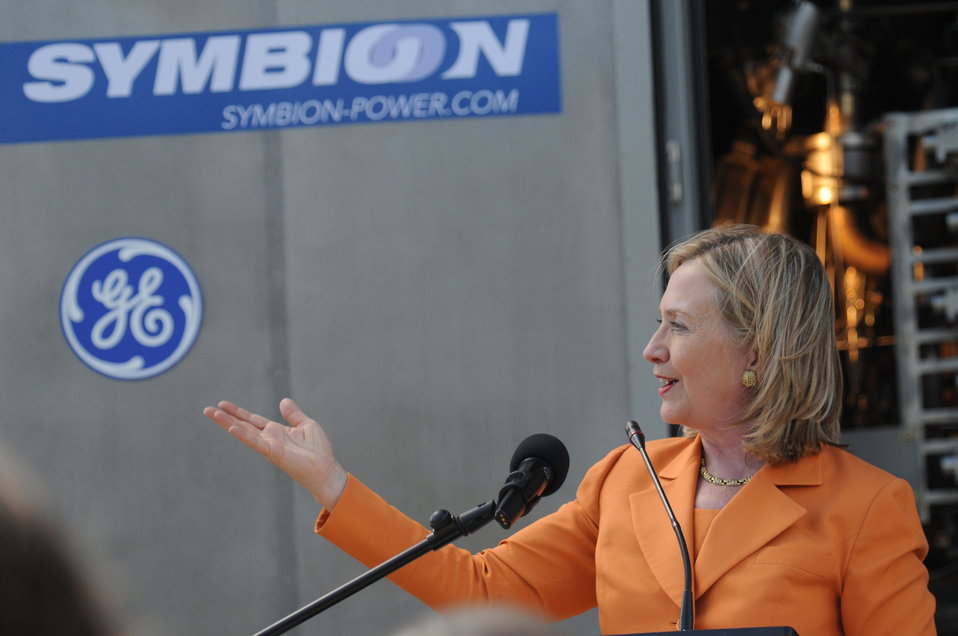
Secretary Clinton Delivers Remarks at the Symbion Power Plant

U.S. Secretary of State Hillary Rodham Clinton delivers remarks at the Symbion Power Plant in Dar es Salaam, Tanzania, on June 12, 2011.